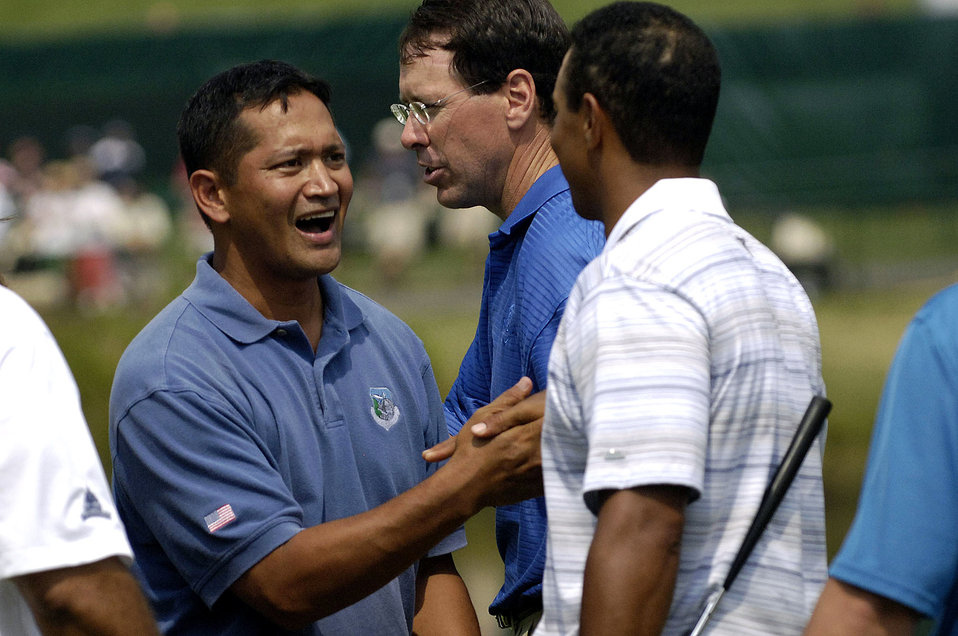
Airman tees it up with the best in the world

Tech. Sgt Andy Amor shakes hands with Tiger Woods after completing their round during a Pro-Am tournament July 4 at Congressional Country Club in Bethesda, Md. Sergeant Amor was selected to represent the Air Force and was paired with Mr. Woods at the event. Mr. Woods was the event host as well as a contestant. Sergeant Amor is with the 316th Civil Engineer Squadron at Andrews Air Force Base, Md.